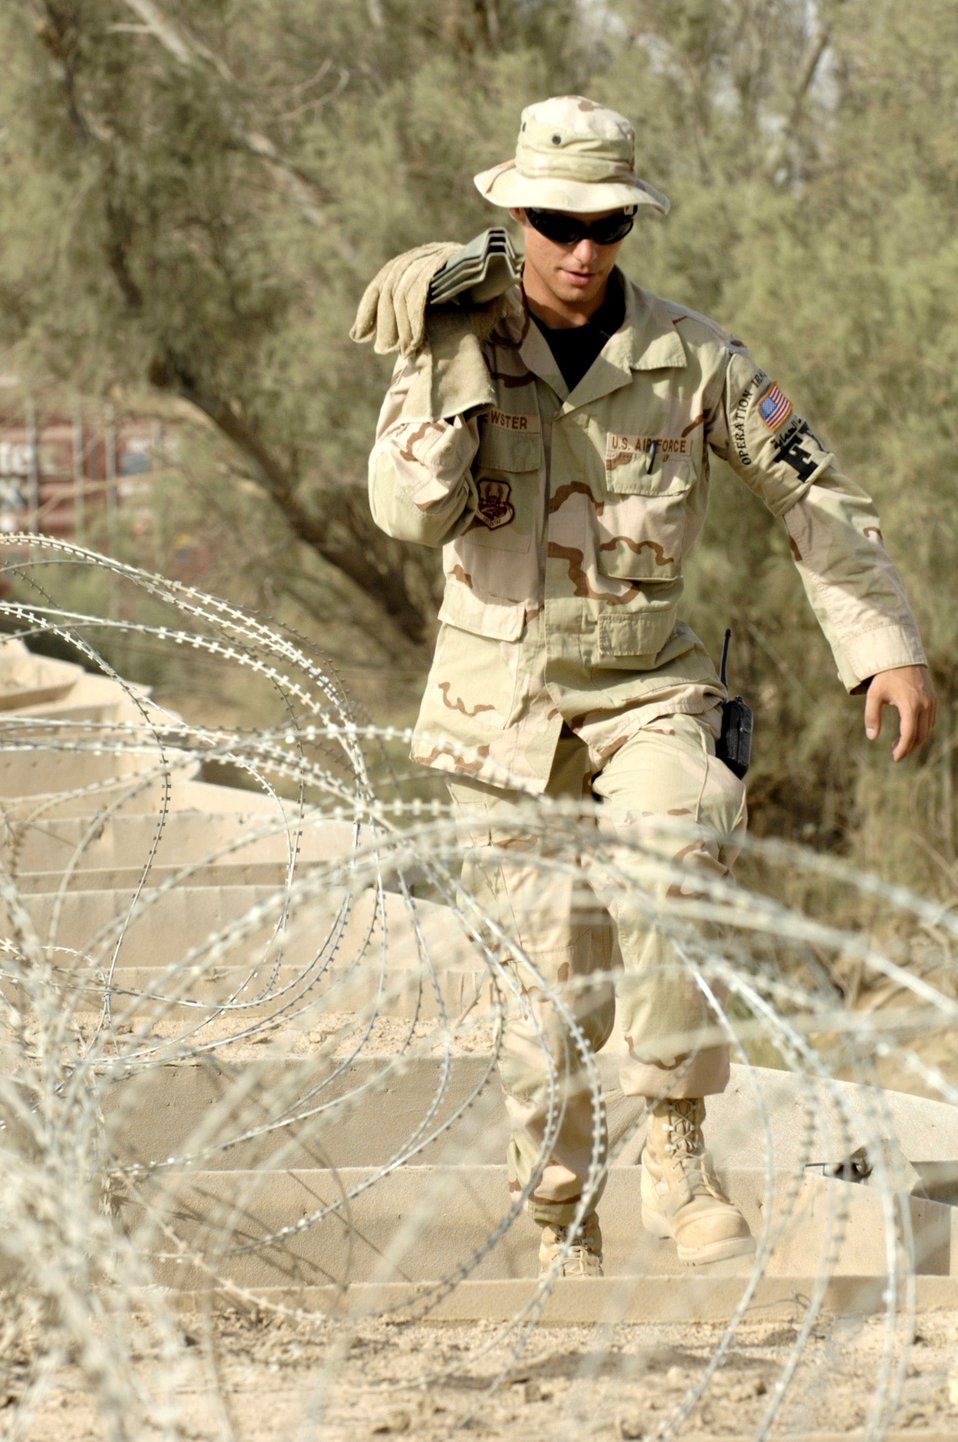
Wired for sound protection

Senior Airman Brian Brewster carries stakes used to hold up the concertina wire his team is installing June 8 on a wall to protect one of the compounds on Ali Air Base, Iraq. Airman Brewster is a member of the 407th Expeditionary Security Forces Squadron's Force Protection Flight. The flight is responsible for monitoring local and third country nationals to detect suspicious activity, augmenting security forces during increased threat levels, as well as monitoring and maintaining installation security measures.